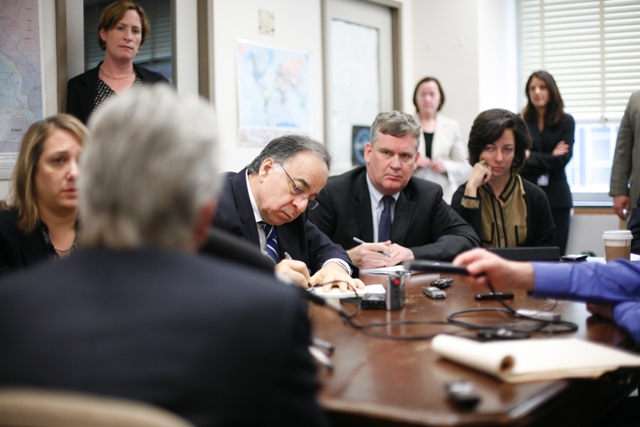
Actor Michael Douglas Is Interviewed By Members of State Department Press Corps

Actor Michael Douglas is interviewed by members of the U.S. Department of State's press corps during his visit to the U.S. Department of State in Washington, D.C., on November 3, 2011.